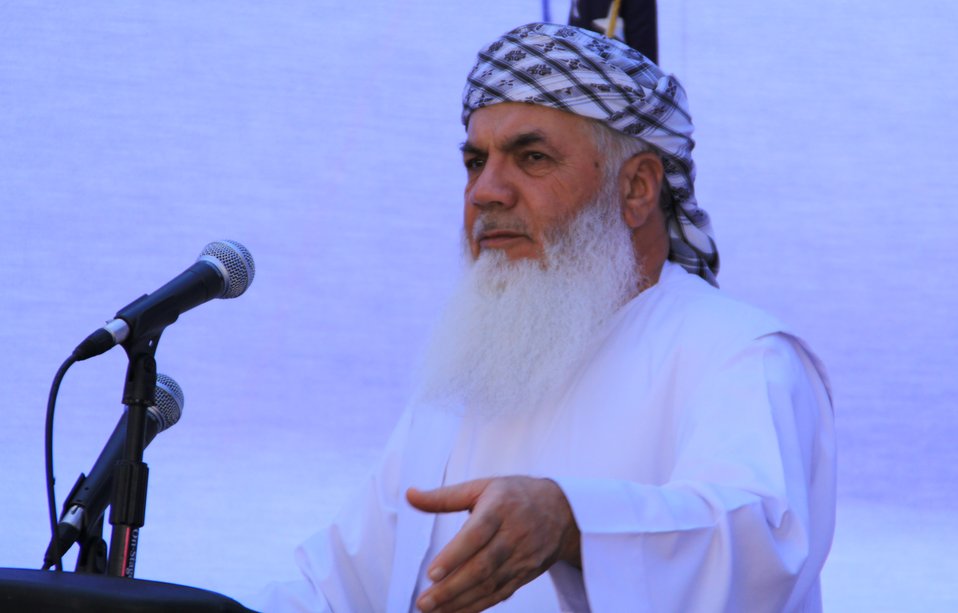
105 MW Tarakhil Power Plant Handover